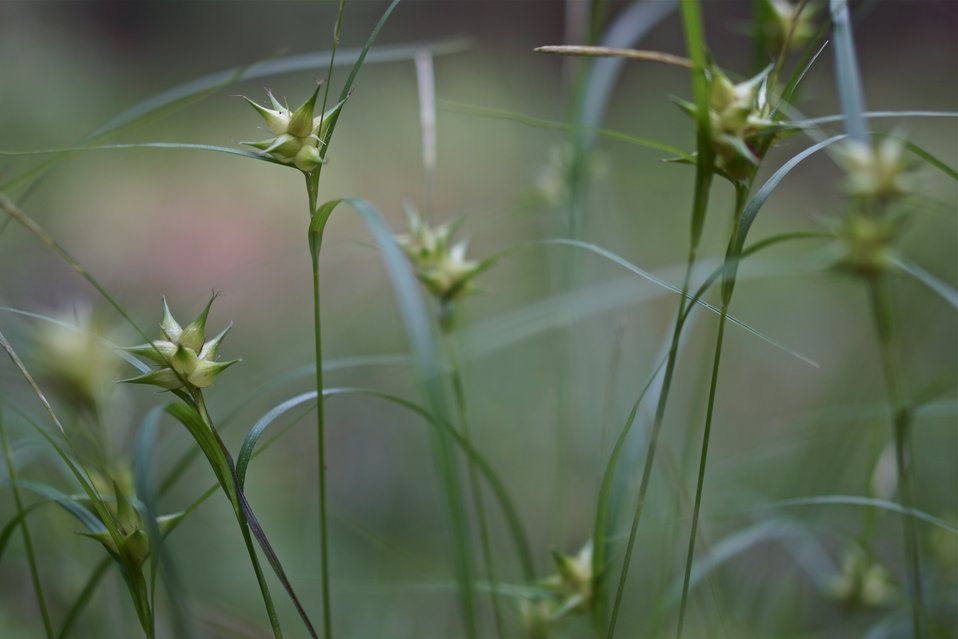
Sedge seedheads

In May, bog conservationists from Tennessee, North Carolina, and Georgia convened in the north Georgia mountains for the spring, 2014 meeting of the Bog Learning Network. The event provided an opportunity for biologists to see, first hand, the result of management efforts at two north Georgia bogs. More importantly, the outings provided an opportunity to share innovative approaches to bog management, such as the role of the Georgia Plant Conservation Alliance in conserving rare plants and coordinating a cadre of volunteers to work on bog management.

The Bog Learning Network was convened in the winter of 2013 as a way to bring together people working for bog conservation across the Southern Appalachians. Southern Appalachian bogs are one of North America’s rarest habitats and home to many rare plants and animals.